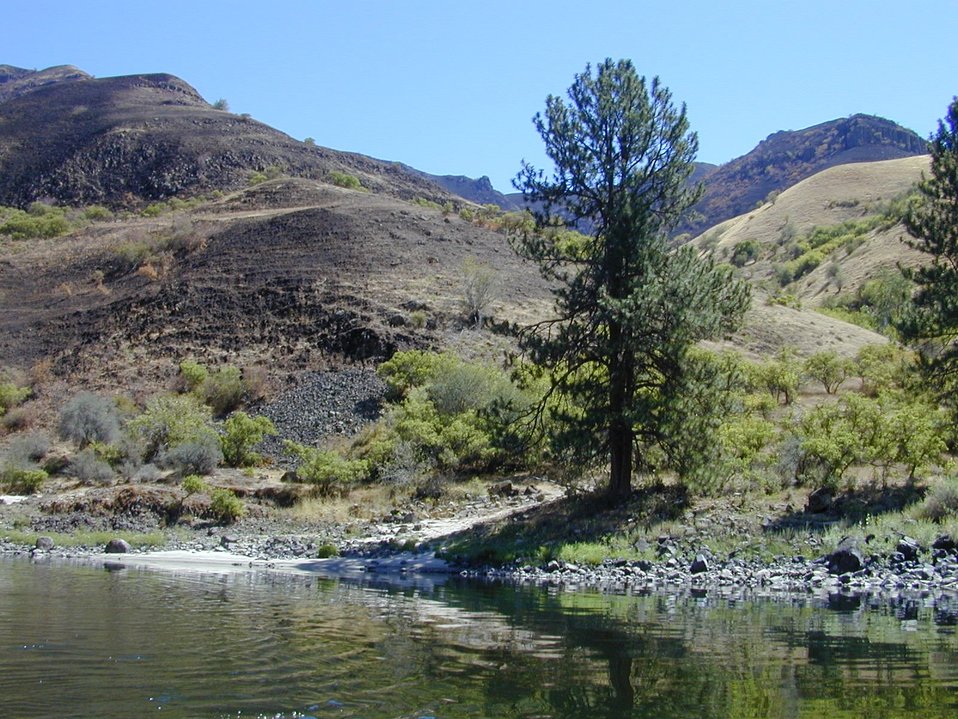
Scenic shot of Lower Salmon River Cottonwood Field Office UCSC Upper Columbia Salmon Clearwater District